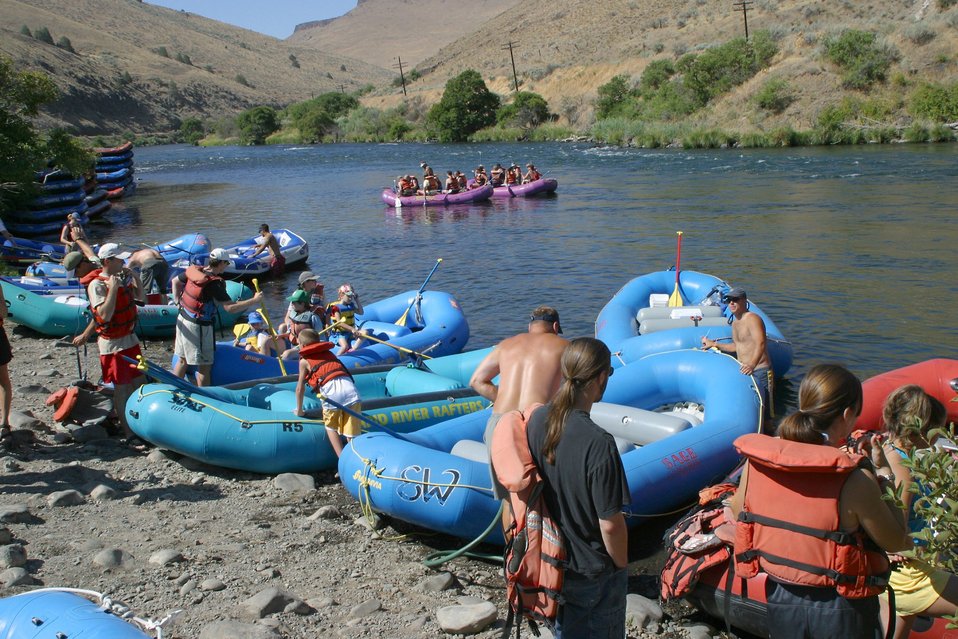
Over 200,000 people a year float the Lower Deshutes River.